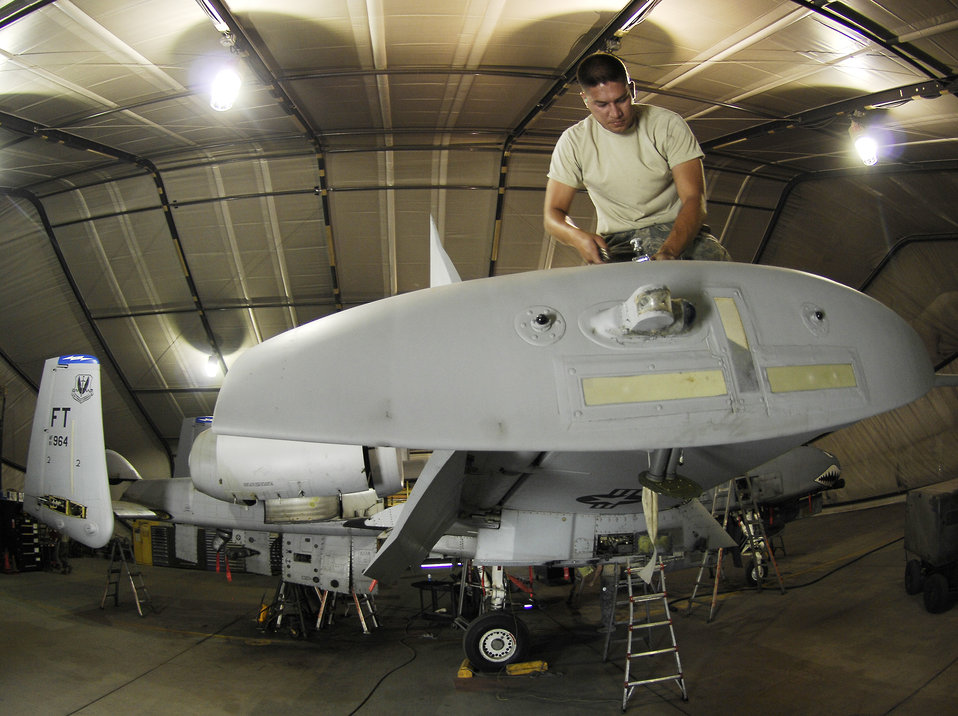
Innovative maintainers save time, lives of front line troops

Staff Sgt. James Cole removes screws from an inspection panel during a phase inspection on the A-10 Thunderbolt II July 2 at Bagram Airfield, Afghanistan. Maintainers here implemented a new phase inspection process that cuts maintenance time on the aircraft in half and ensures the aircraft can provide close-air support for ground troops in Afghanistan. Sergeant Cole is a 455th Expeditionary Maintenance Squadron structures technician.